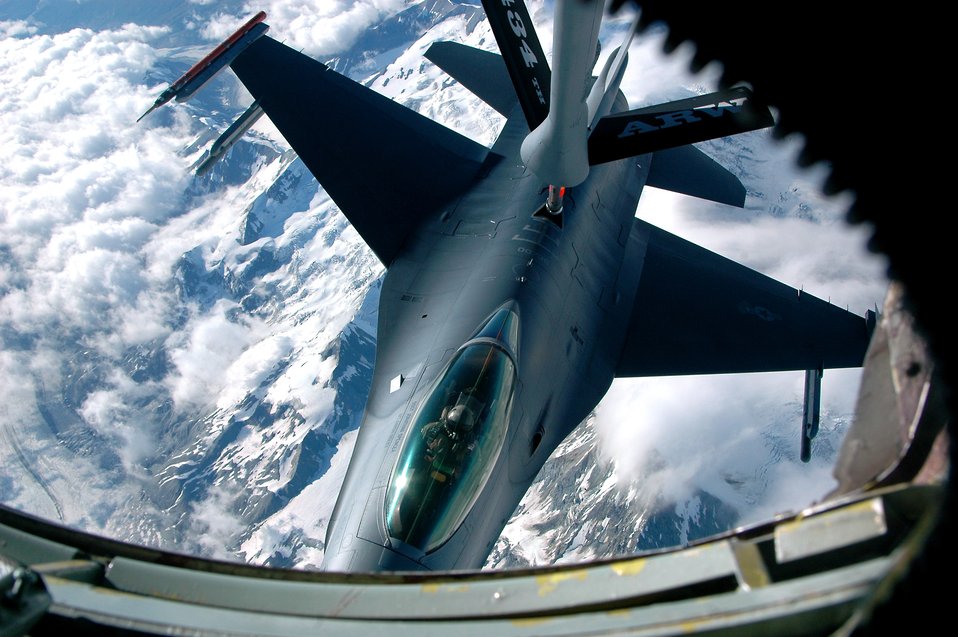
Fill 'er up

A KC-135 Stratotanker from Grissom Air Reserve Base, Ind., refuels an F-16 Fighting Falcon from Eielson Air Force Base, Alaska, over the Pacific Alaska Range Complex during Red Flag-Alaska July 16. Red Flag-Alaska is a multinational air combat training exercise.